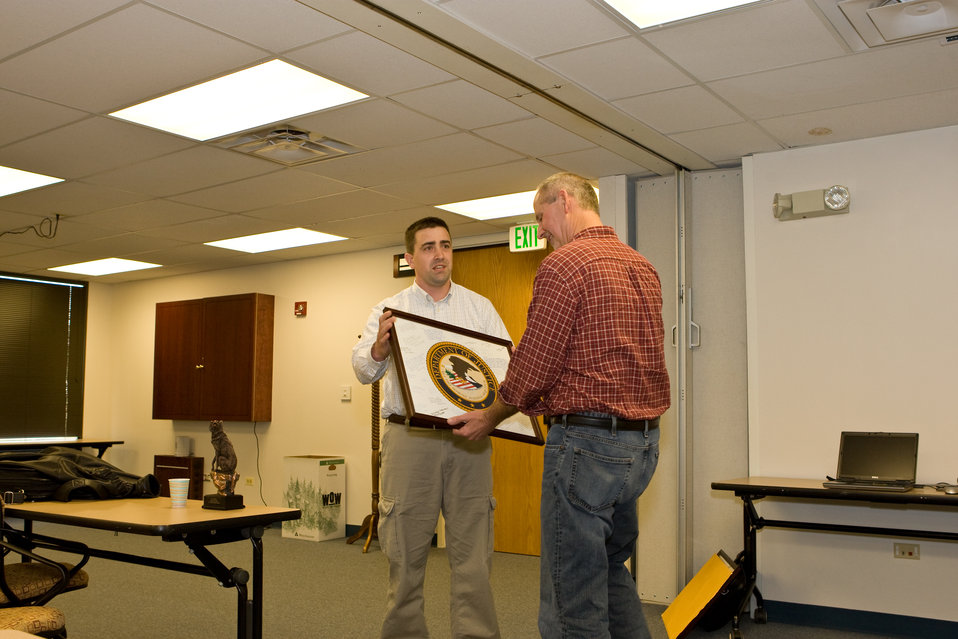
Ed Bangs Receives a Department of Justice Seal

On May 23rd, 2011 The U.S. Fish and Wildlife Service Mountain-Prairie Region honored three of the most influential individuals in wolf recovery in the Northern Rocky Mountains: Ed Bangs, Steve Fritts, and Margot Zallen. Ed Bangs started the event with an hour-long presentation, “Wolf Conservation: The Good, The Bad, and The Ugly.”

Following the presentation, Regional and National leadership recognized the imminent retirement of Ed, Steve, and Margot with a variety awards for their contributions.